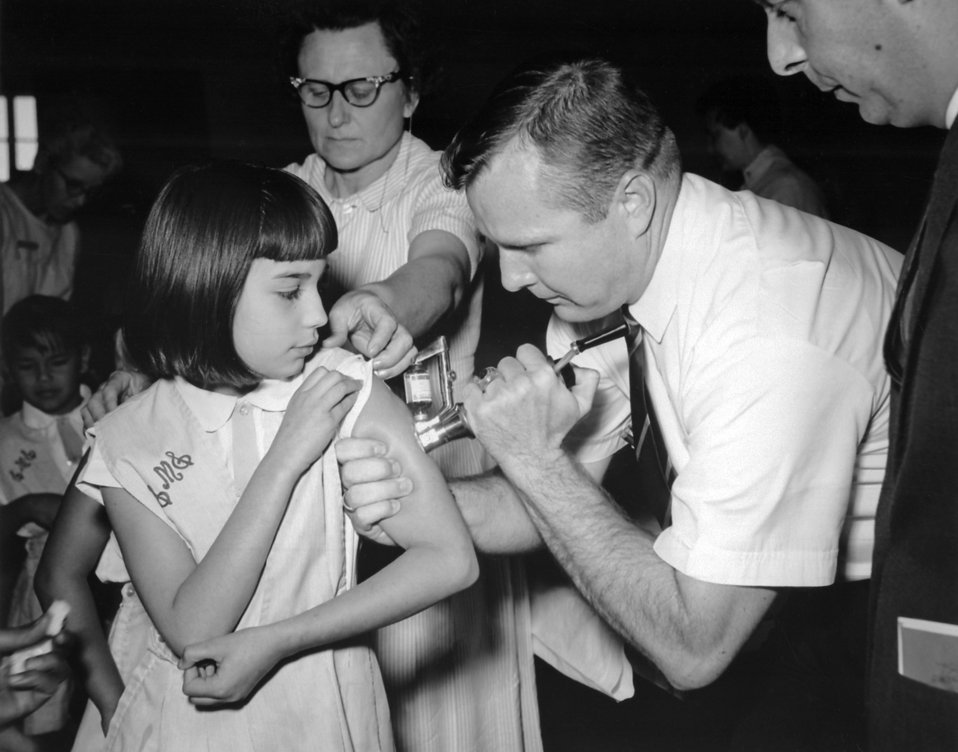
A jet injector gun being used at an immunization clinic.